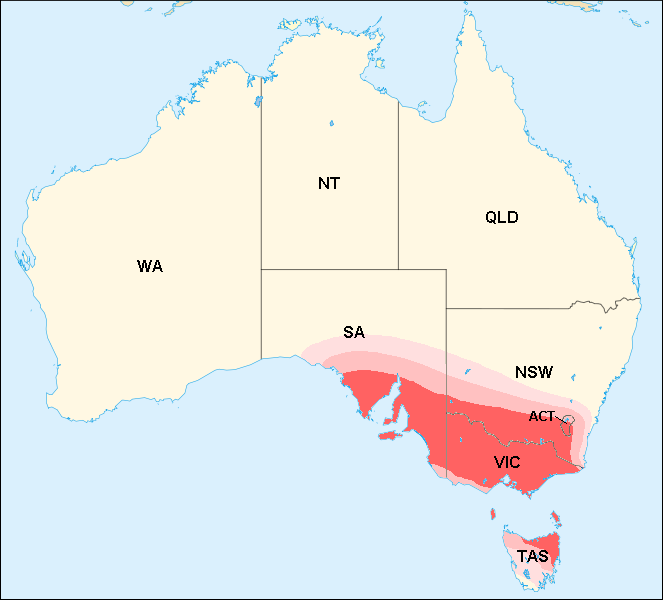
Map of the 2009 Southern Australia heat wave affected area. Based on the Australia locator map. Made by myself in mspaint.